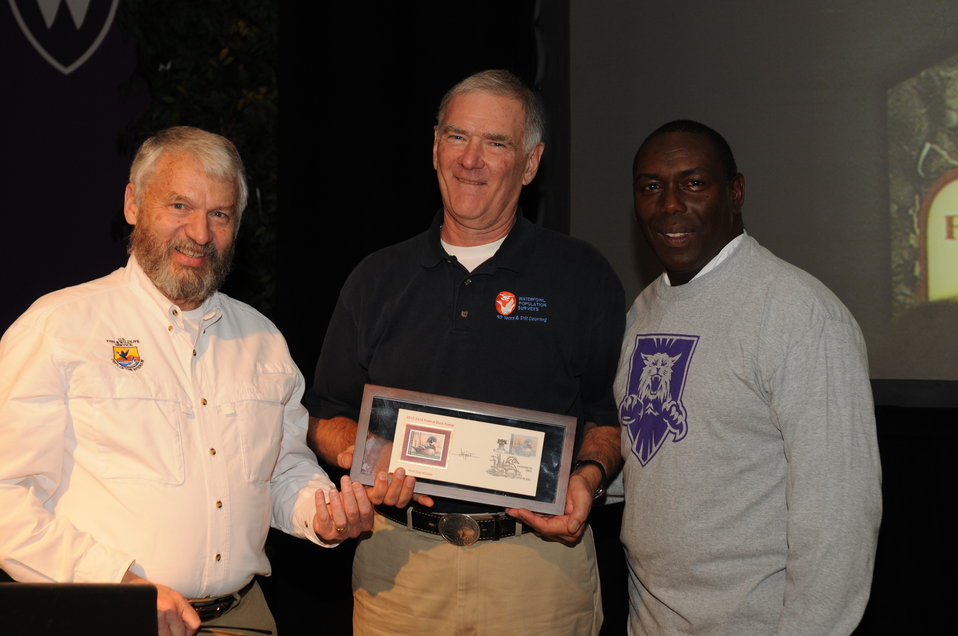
Judge Recognition

The U.S. Fish & Wildlife Service sponsored the 2012 Federal Duck Stamp Art Contest September 28 and 29 in Ogden, Utah, at Weber State University. A panel of five judges was responsible for choosing the art work used to design the 2013-2014 Migratory Bird Hunting and Conservation Stamp.